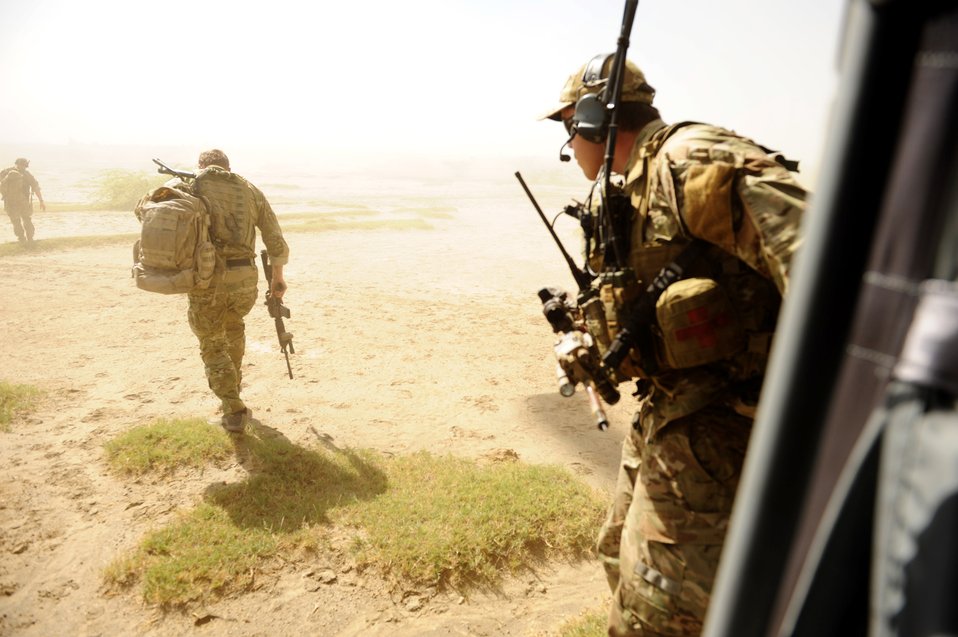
Haiti Earthquake Relief

Air Force combat controllers exit a UH-60 Black Hawk helicopter to set up for an air delivery of humanitarian aid into Port-au-Prince, Haiti, Jan 18, 2010. Department of Defense assets have been deployed to assist in the Haiti relief effort following a magnitude 7 earthquake that hit the city on Jan. 12, 2010. The combat controllers are assigned to the 23rd Special Tactics Squadron at Hurlburt Field Fla.